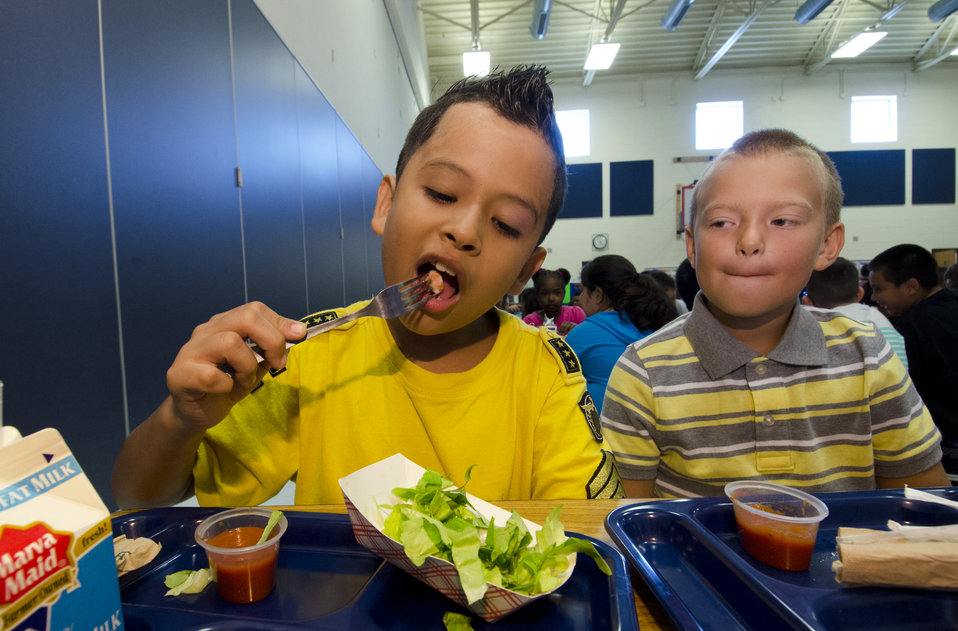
School lunch staff and students enjoy the new school lunch menu created to meet the new standards at the Yorkshire Elementary School in Manassas, VA on Friday, Sept. 7, 2012.